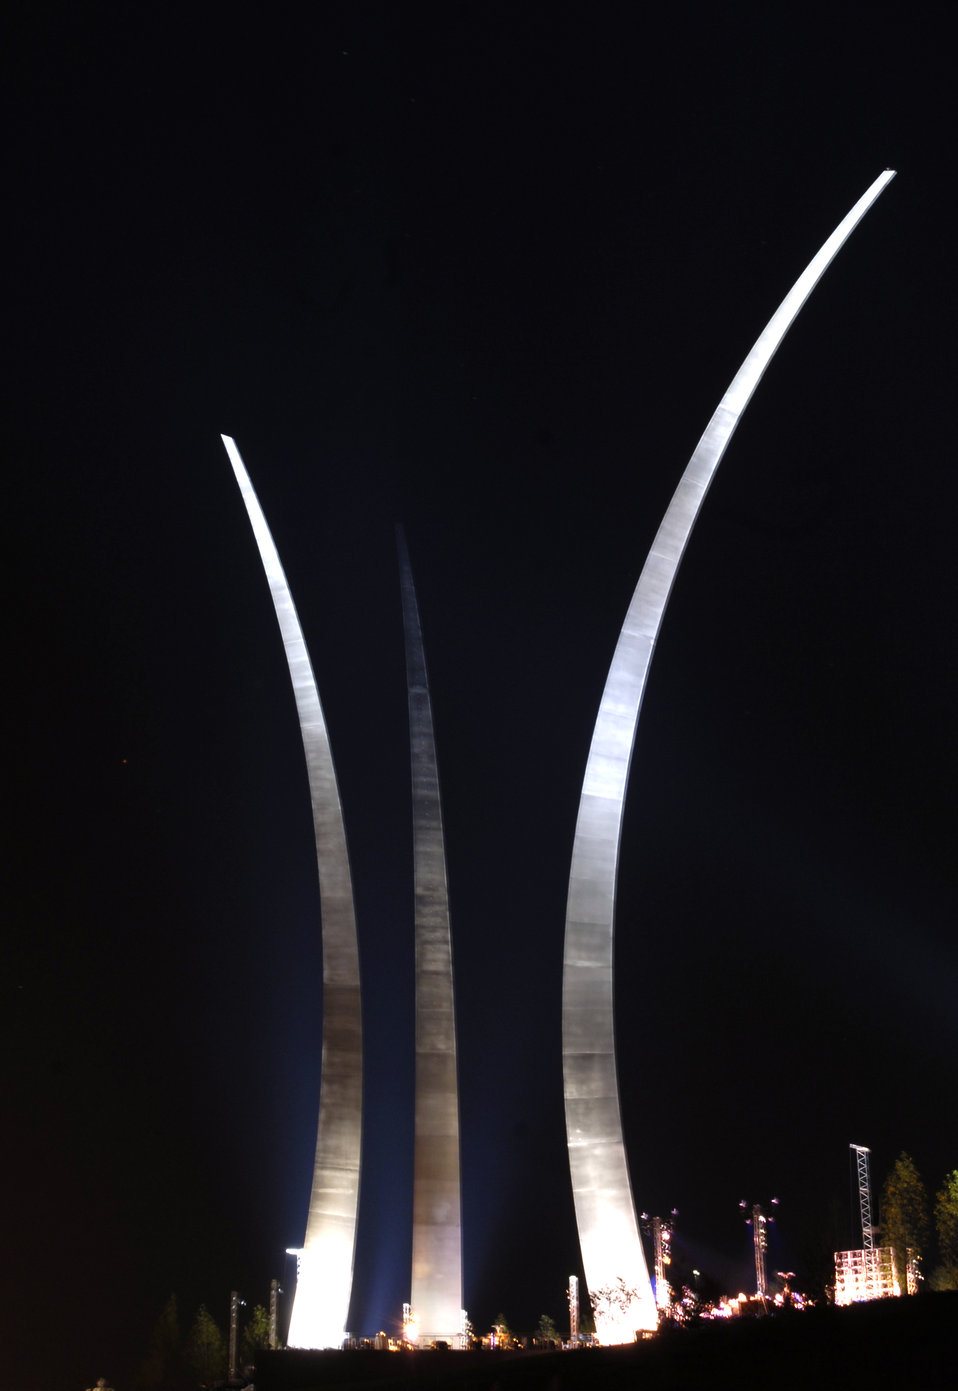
Fireworks light the night sky at memorial dedication event

Fireworks light up the Air Force Memorial Oct. 13 at Arlington, Va., on the eve of its official dedication ceremony. President George W. Bush will join senior Defense Department and Air Force officials in a ceremony to present the memorial to the nation today. Designed by the late James Ingo Freed, the memorial with its three soaring spires inspired by the U.S. Air Force Thunderbirds bomb burst maneuver, pays tribute to and honors the men and women of the U.S. Air Force and its predecessor organizations.